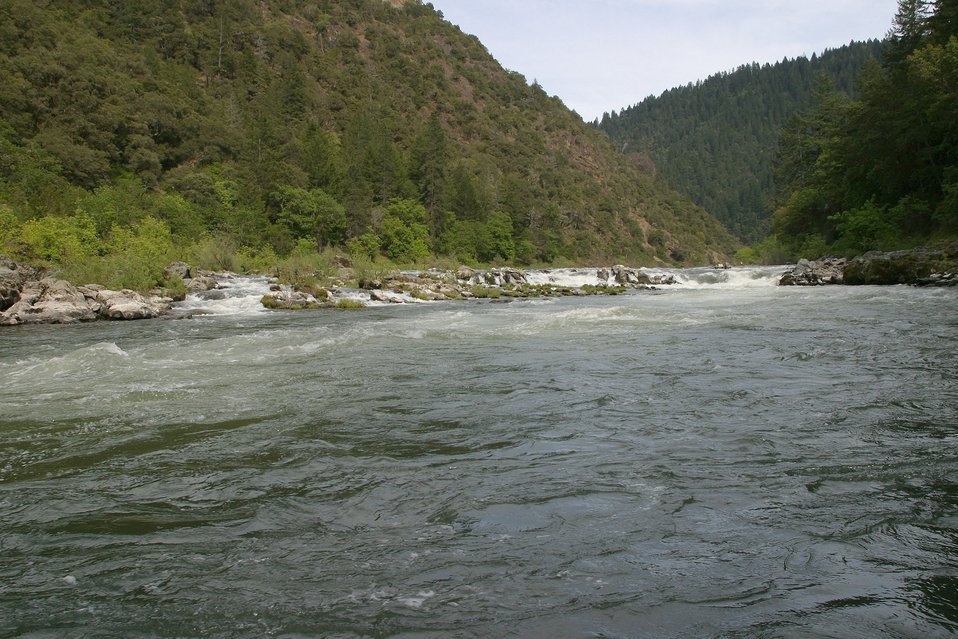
Rainie Falls on the Wild section of the Rogue River from Grave Creek to Foster Bar. 3100 cfs at Grants Pass and 5300 at Agness.